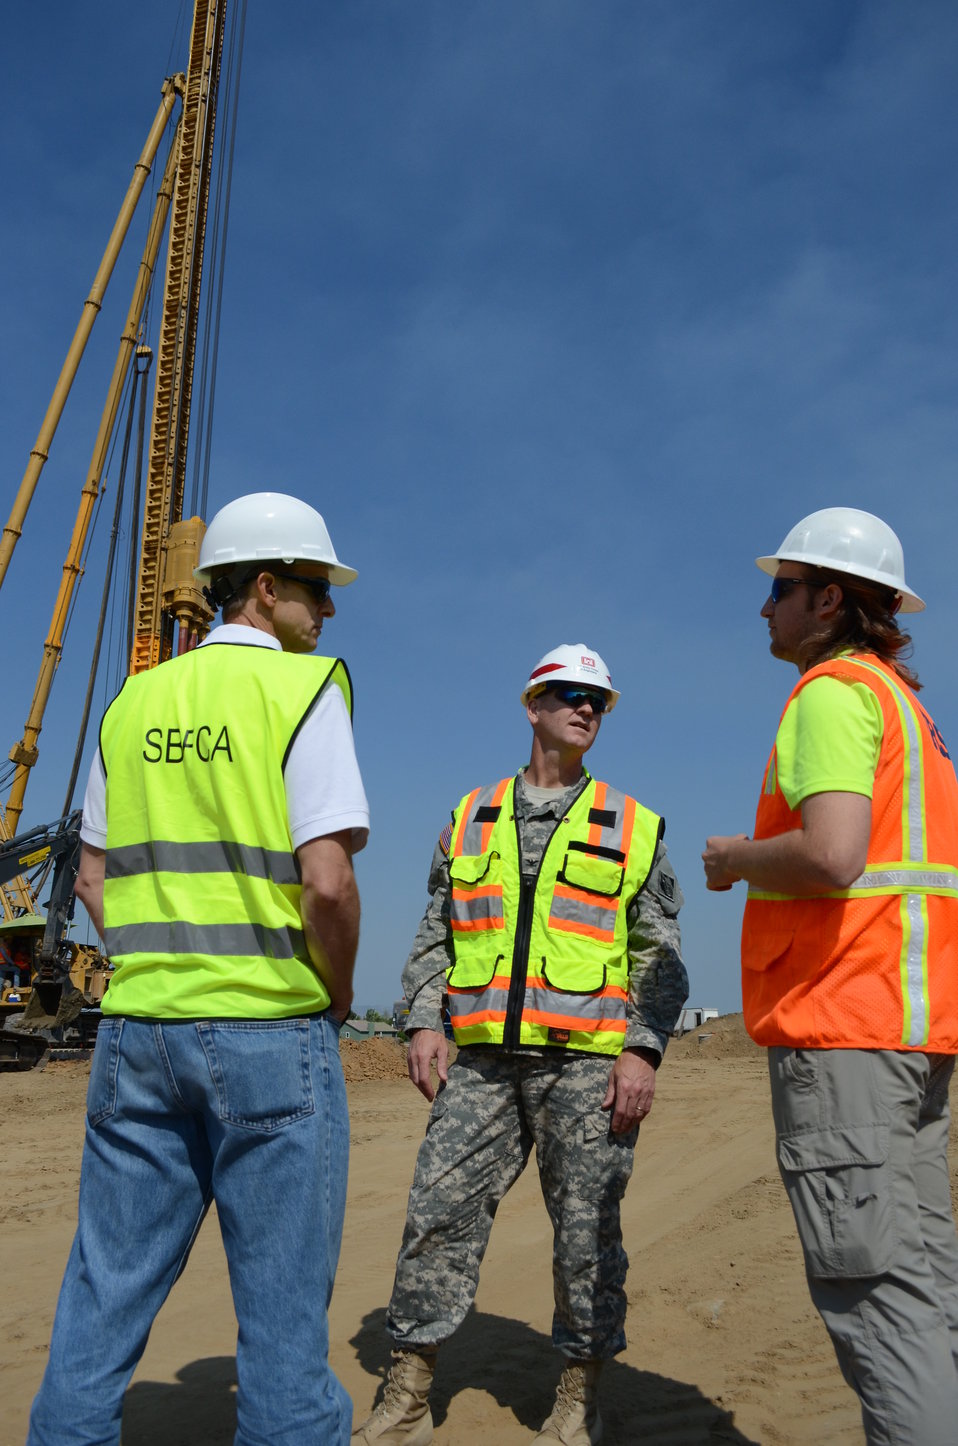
Sutter Basin Feasibility Study Nears Final Milestone

130821-A-ZW314-009: Col. Mike Farrell (center), commander of the U.S. Army Corps of Engineers Sacramento District, and Michael Bessette (left), director of engineering for Sutter Buttes Flood Control Agency, are briefed by a construction representative about the slurry wall construction underway at Shanghai Bend in Yuba City, Calif., Aug. 21, 2013. This work is part of the Sacramento District's recommended plan for the Sutter Basin Feasibility Study. The study will detail the federal government’s role in the project, which will improve more than 40 miles of levee along the Feather River. The study is nearing its final milestone of a Civil Works Review Board – the Corps’ final review before the plan goes to Congress for consideration.